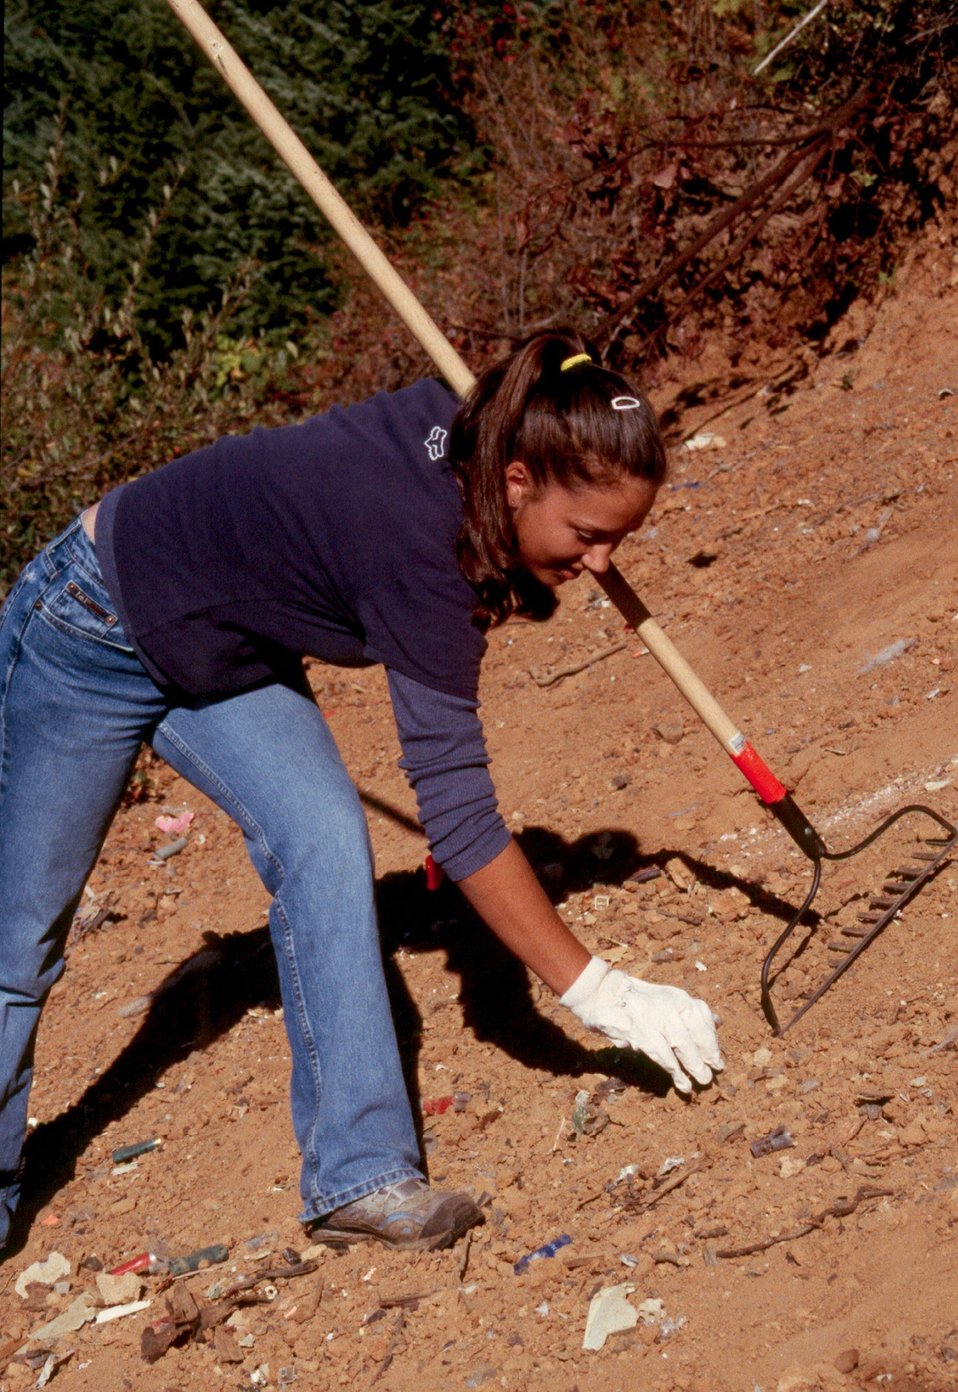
A Junction City Girl Scout from troupe #203, helps pick up trash